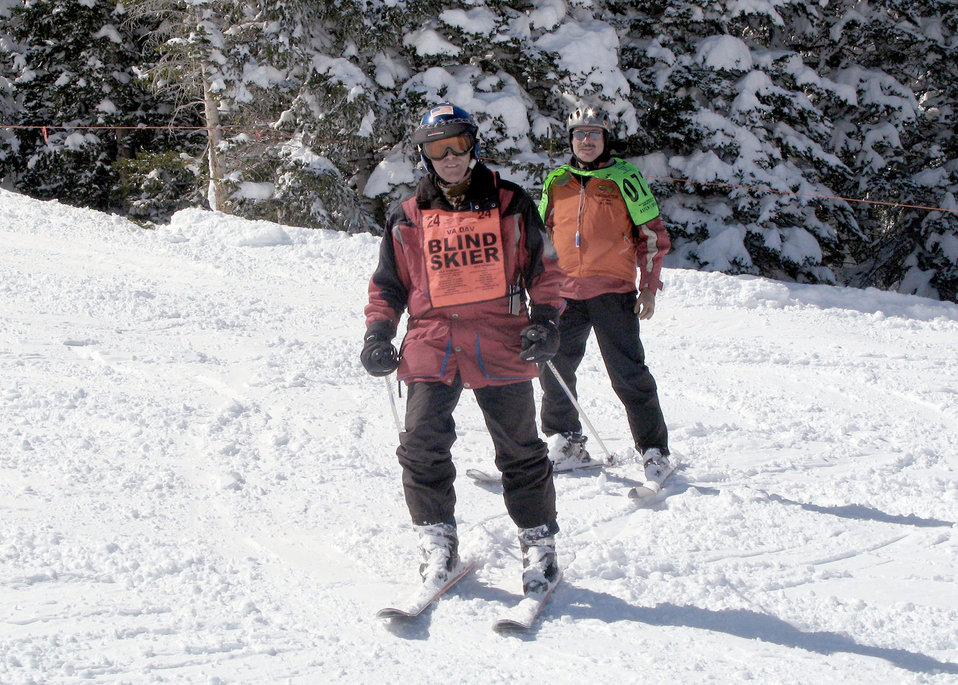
Disabled vets discover 'miracle on mountain'